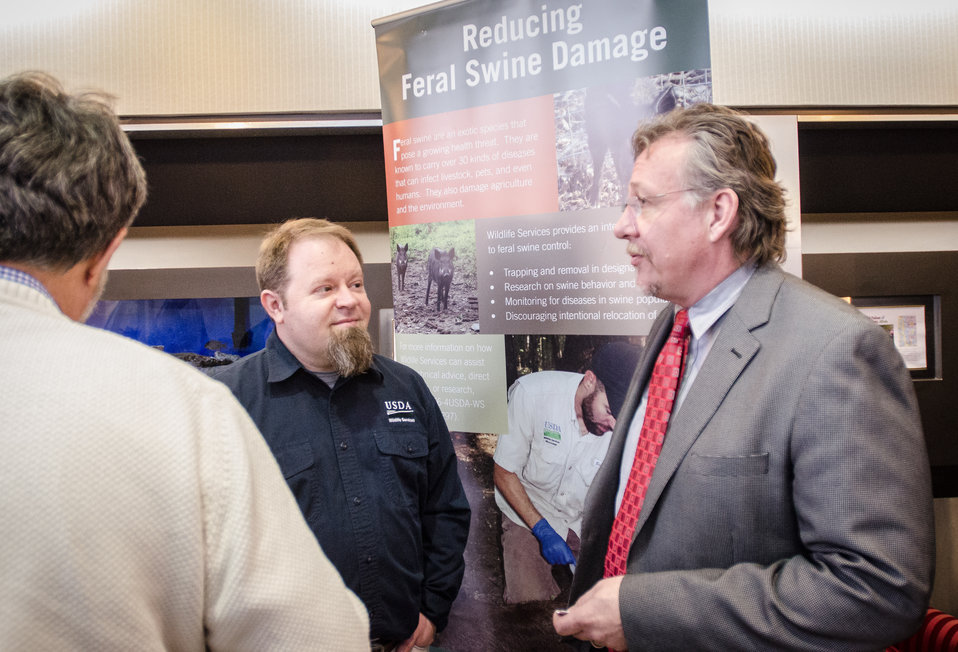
U.S. Department of Agriculture (USDA) Animal and Plant Health Inspection Service Wildlife Services Staff Wildlife Biologist Jeffrey Rumbaugh, center, and Area Veterinarian-In-Charge Dr. Mark A. Remick, right, talked with farmers a participating in the “Virginia State University (VSU), USDA and Virginia Farmers Working Together” outreach workshop in the VSU, L. Douglas Wilder building on Thursday, March 7, 2013, in Petersburg, VA. Farmers shared and learned new ways to do more with USDA services, and how to apply for programs that will help grow their business.